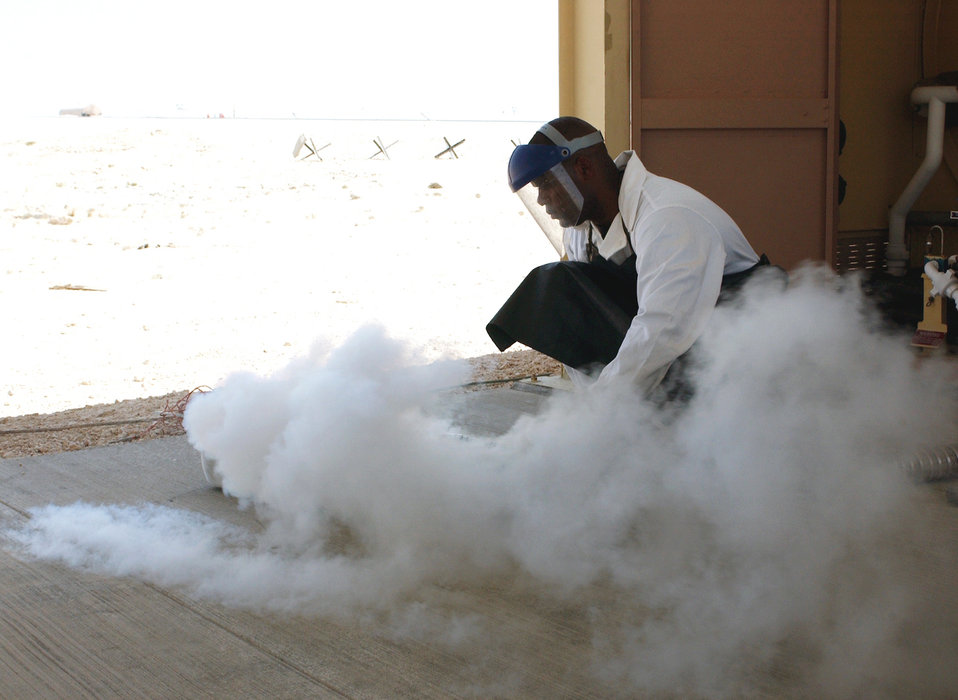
Cold spell

AL UDEID AIR BASE, Qatar -- Staff Sgt. Anthony Anderson catches excess liquid oxygen into a drip pan. Oxygen turns to liquid at minus 297 degrees Fahrenheit. It clouds as it changes from liquid to gas. Anderson is assigned to the cryogenics section of the 379th Air Expeditionary Wing here.